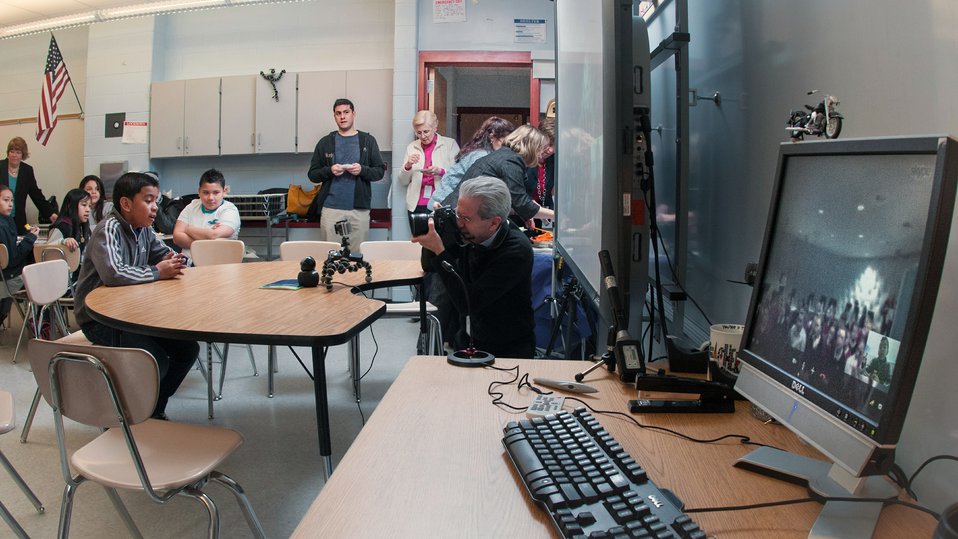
Harmony Hills Elementary School 5th grade students were able to ask questions about school life at Dalry Primary School in North Ayershire, Scotland, United Kingdom, using a live overseas internet video connection, during the inaugural International School Meals Day (ISMD) at Harmony Hills Elementary School in Silver Spring, MD, on Friday, March 8, 2013. The ISMD has 14 classrooms (grades 3-8) in the U.S. connected with 14 classrooms in Scotland. USDA plans to expand the initiative to include partnerships with additional countries in future years. USDA's Food and Nutrition Service oversees the administration of 15 nutrition assistance programs that work in concert to form a national safety net against hunger. Learn more by visiting www.fns.usda.gov and twitter @USDANutrition.